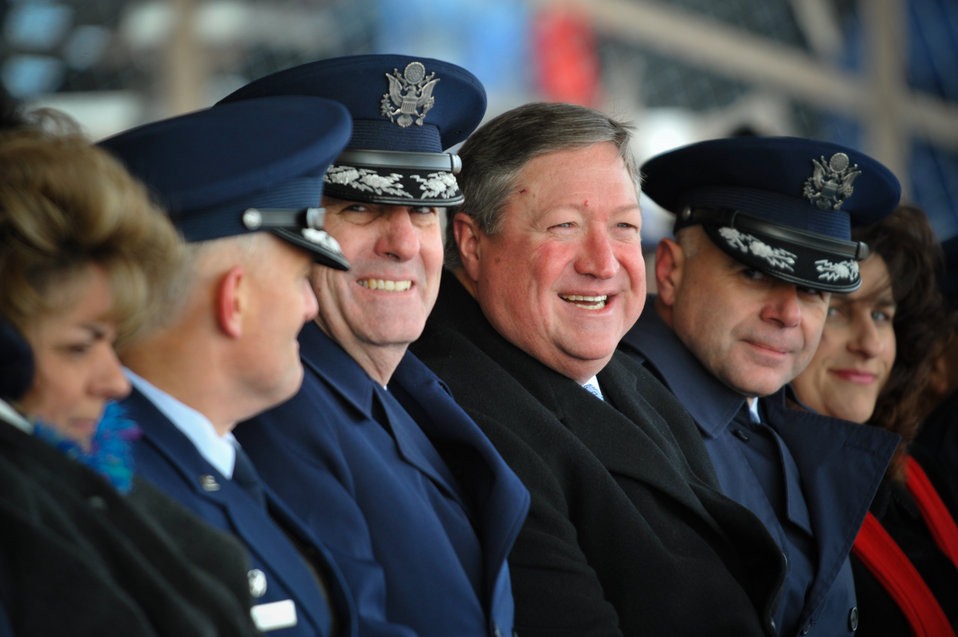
Air Force secretary visits Lackland, addresses priorities

Secretary of the Air Force Michael Donley stands with Gen. Stephen R. Lorenz (left of Donley) and Col. Shane Courville (right of Donley) after the graduation Jan 8, 2010, at Lackland Air Force Base, Texas. General Lorenz is the Air Education and Training Command commander. Colonel Courville is the 737th Training Group Air Force Basic Military Training commander.